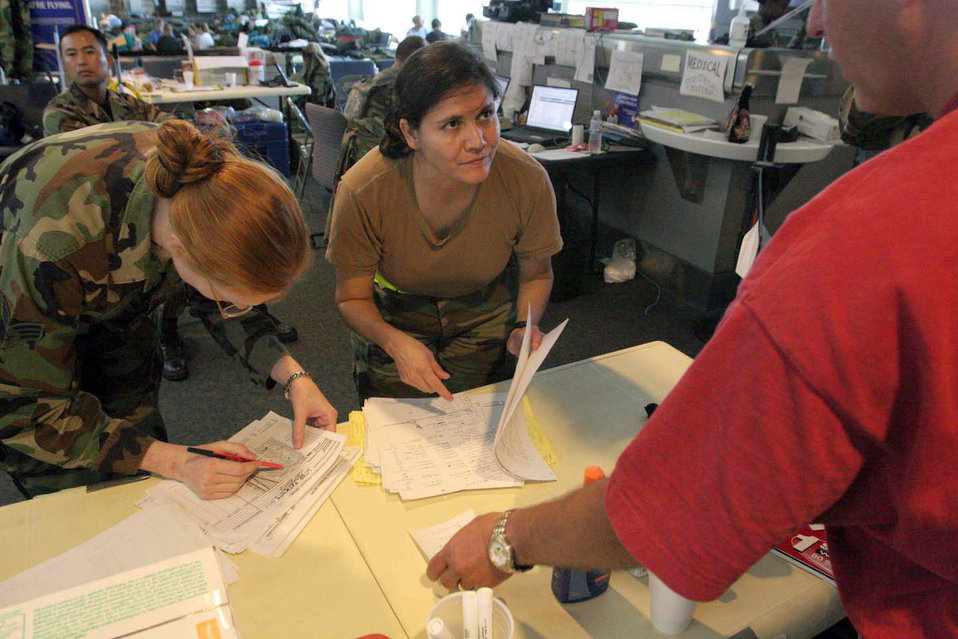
Searching the manifests

LOUIS ARMSTRONG NEW ORLEANS INTERNATIONAL AIRPORT, La. -- Staff Sgt. Sonia Chavez and her co-worker assist Joel Hunt in his search for his mother, Miriam. The 375th Medical Group is deployed here from Scott Air Force Base, Ill., to assist in airlifting and providing medical care to displaced Americans affected by Hurricane Katrina. Sergeant Chavez searched through passenger manifests trying to find Mr. Hunt's mother. Mrs. Hunt was later located in a nursing home facility in northern Louisiana.